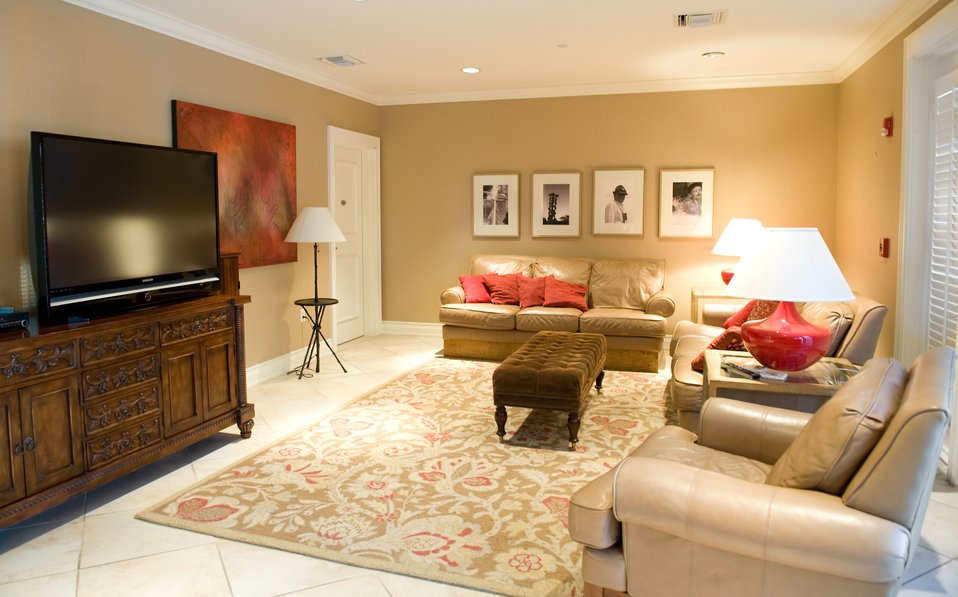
AF Spouse Raises Half a Million for Fisher House

A TV-room in one of the two newer Fisher Houses in San Antonio Nov. 25. Each of these 16,800 square foot Fisher Houses can accommodate up to 42 families visiting their injured love ones. Private donations were used to fund their construction, operation and maintenance.